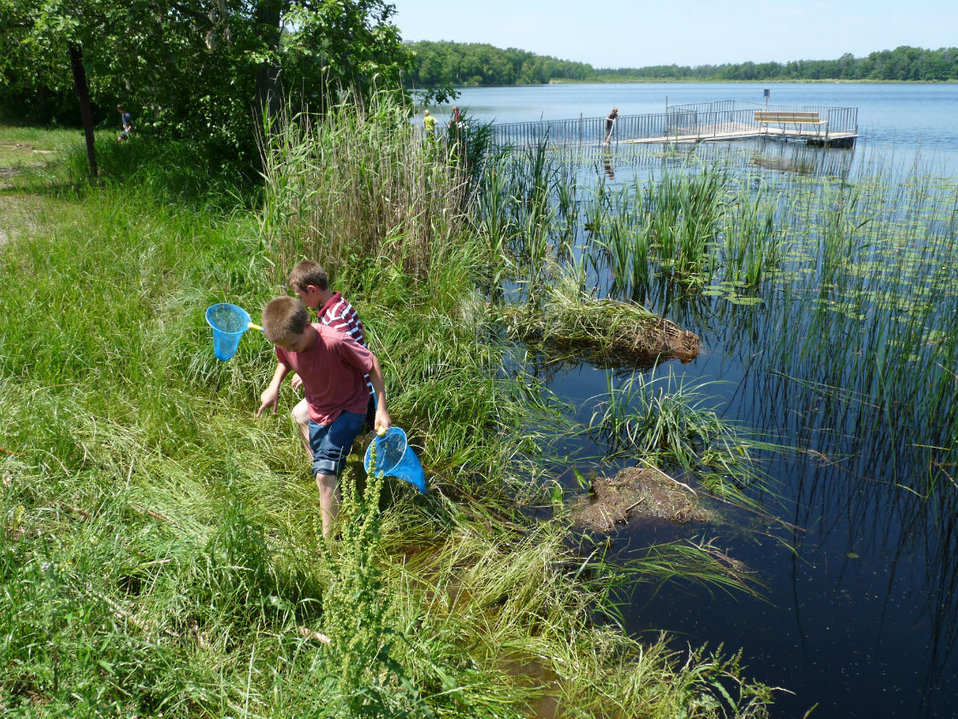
Fishing for native aquatic species

Two young gentlemen who were not afraid to get their feet wet at Mandy Lake.